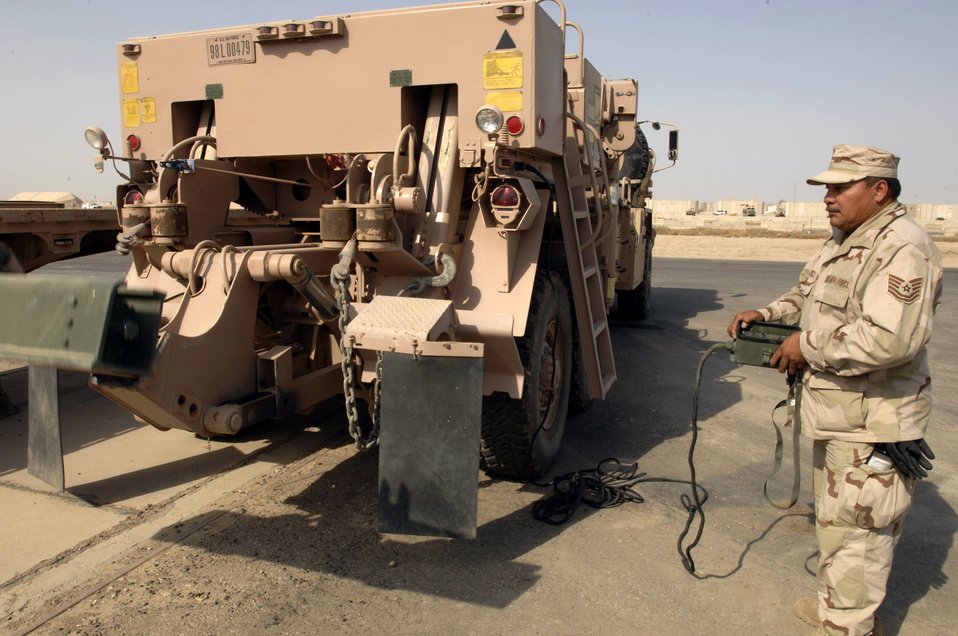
Airman keeps vehicles movin' four decades in the making

Technical Sgt. Miguel Casarez checks the winch on a five-ton wrecker for proper operation Oct. 4 at Ali Base, Iraq. This vehicle is primairly used to tow or pull out stuck or broken down heavy vehicles. Sergeant Casarez is a member of theTexas Air National Guard's 149th Fighter Wing's Logistics Readiness Squadron deployed to the 407th Expeditionary Logistics Readiness Squadron.